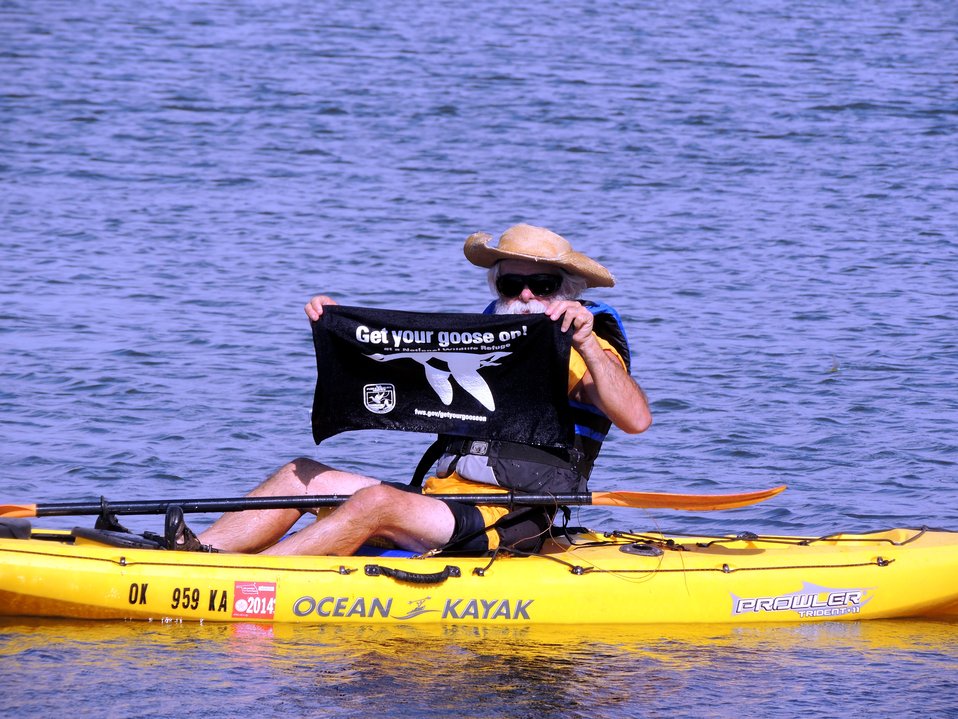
Get Your Goose On!

Wichita Mountains National Wildlife Refuge in Oklahoma.